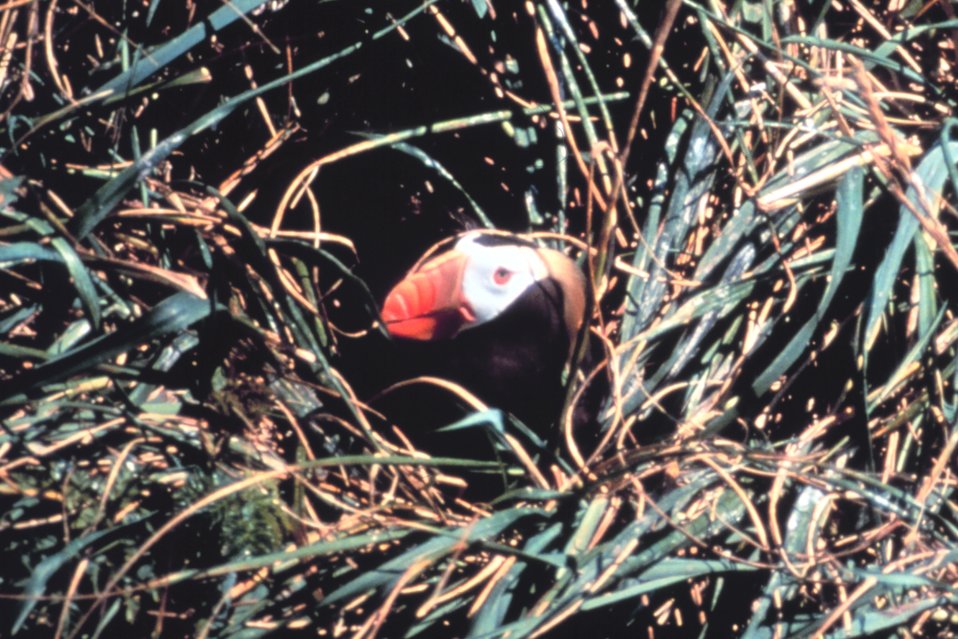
Tufted puffin